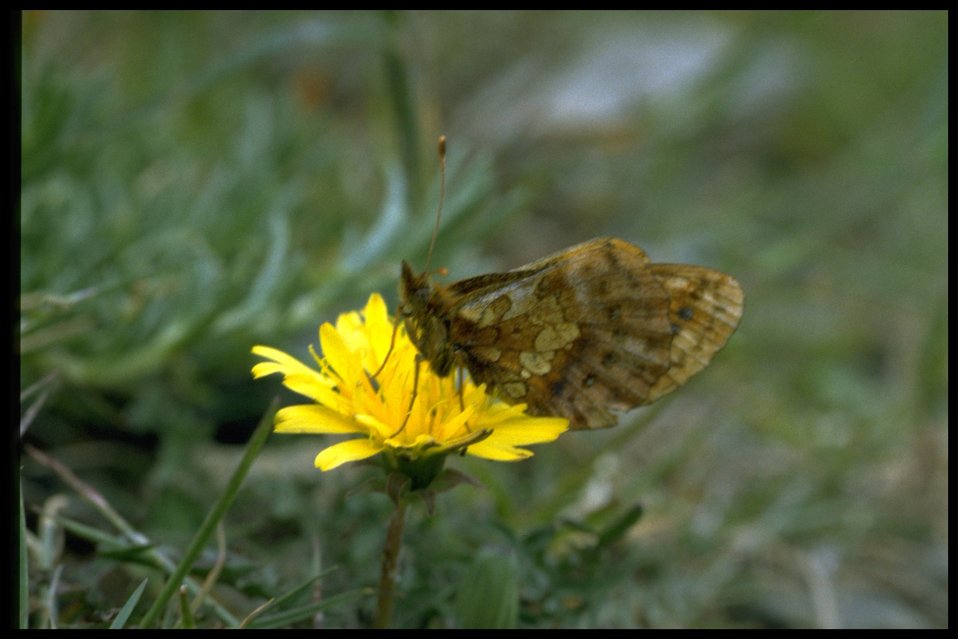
Medium shot of butterfly and wildflower.